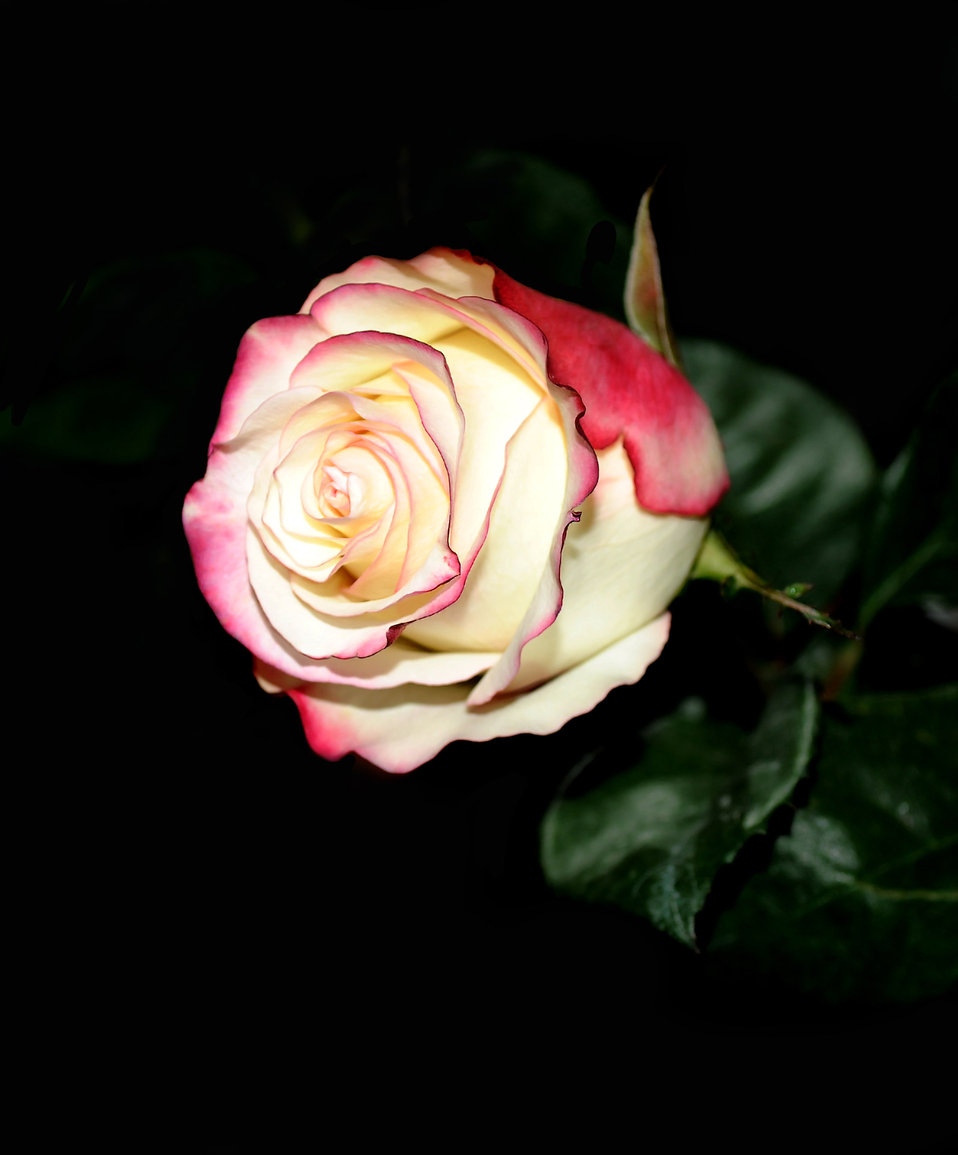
Rose on a dark background

Beautiful rose on a dark background.